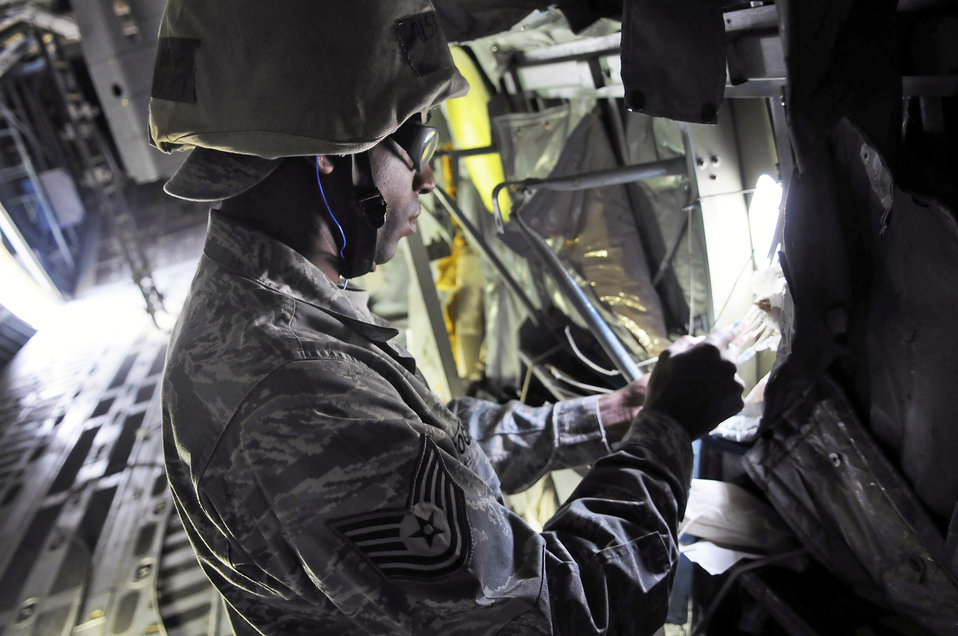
Robins flight

TSgt. Stacy Cochran makes repairs inside a C-130 recently at Robins Air Force Base, Ga., during exercise training. Sergeant Cochran is with the newly-formed Expeditionary Depot Maintenance Flight, which travels globally to perform emergency aircraft repairs.